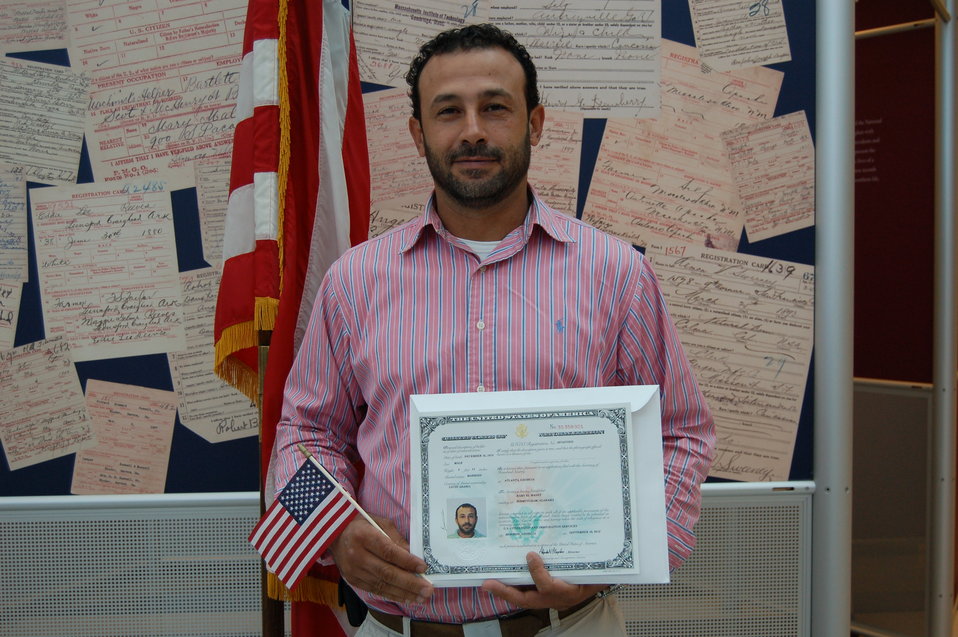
New Citizens